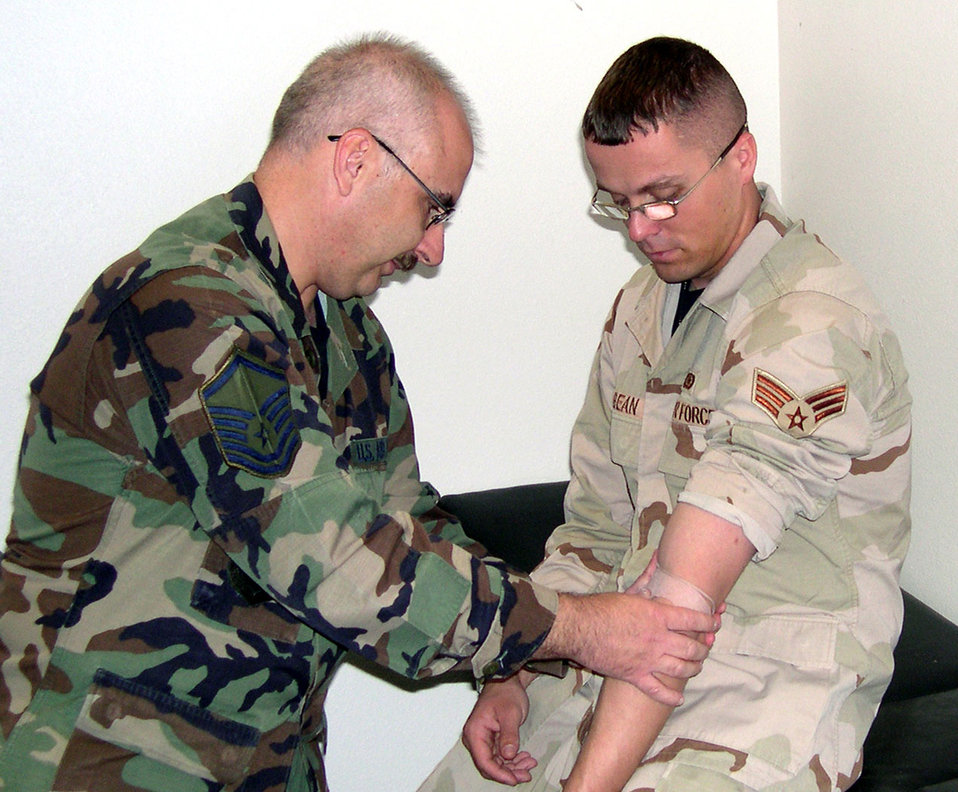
Support agencies ease deployed Airmen's return

Master Sgt. David Adkins bandages Senior Airman Mikeal Bean's arm after drawing a post-deployment blood sample Sept. 25 at Laughlin Air Force Base, Texas. Airman Bean, assigned to the 47th Communications Squadron, returned the previous day from a deployment to Ali Base, Iraq. Sergeant Adkins is assigned to the 47th Aeromedical Dental Squadron.